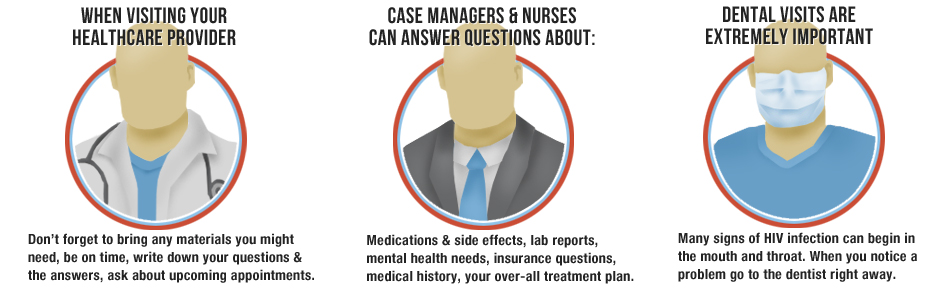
doctor clinical dentistvists